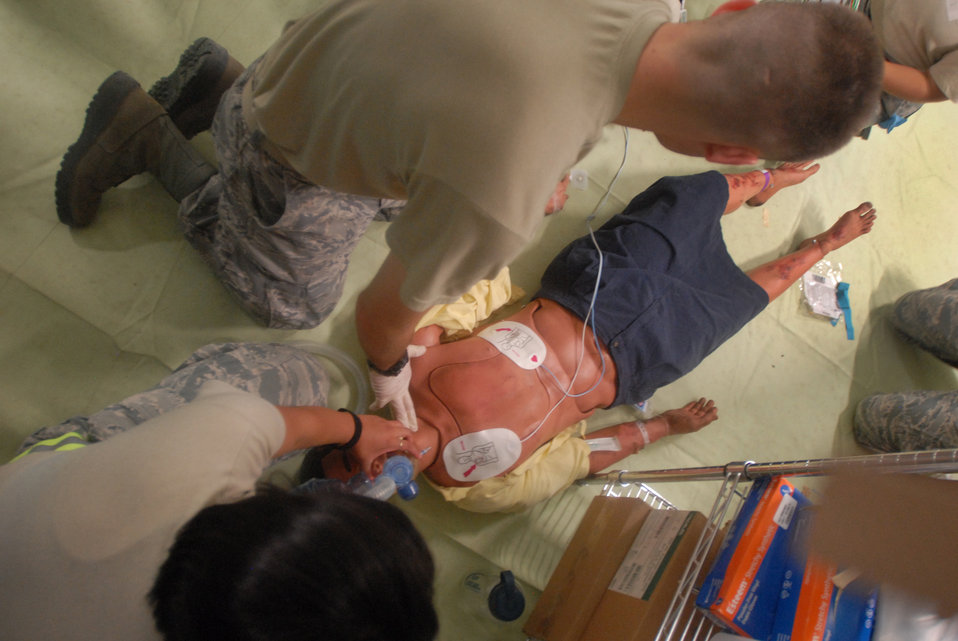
Vibrant Response 13

Senior Airman Jacob Watters, a medical technician, checks for a pulse after medical personnel restarted a